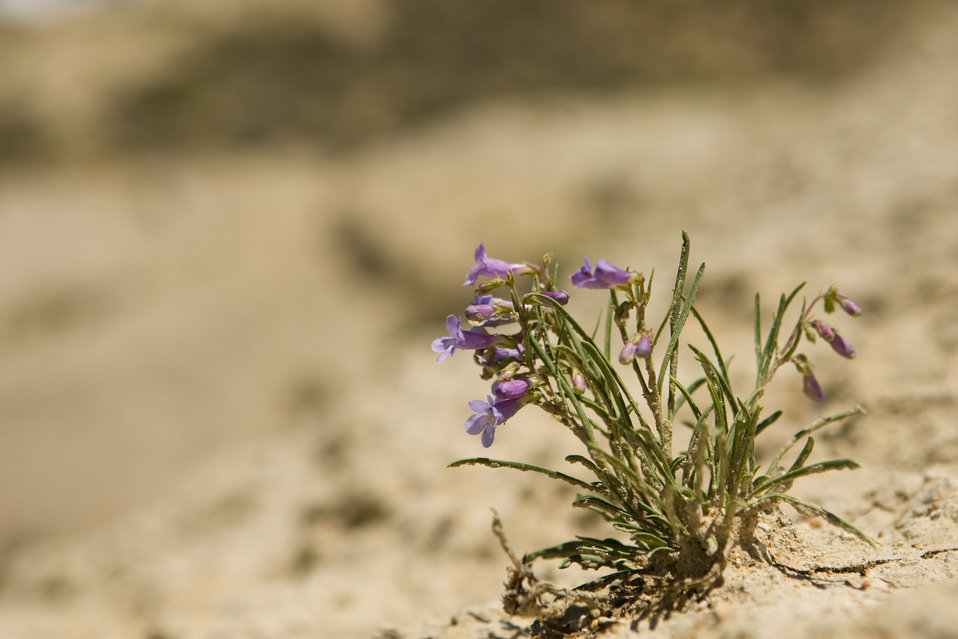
Colorado Rare Plant Conservation Initiative

The Colorado Rare Plant Conservation Initiative (RPCI) is a partnership of 23 statewide and regional agencies, private organizations, and academic institutions working to conserve 121 rare plants in Colorado. As part of these efforts the group developed the Colorado Rare Plant Conservation Strategy, developed Best Management Practices to reduce energy development impacts, addressed climate change, and developed focused strategies for the conservation of individual species at eight priority landscapes. The group has also worked to coordinate volunteer efforts for plant conservation across the state.